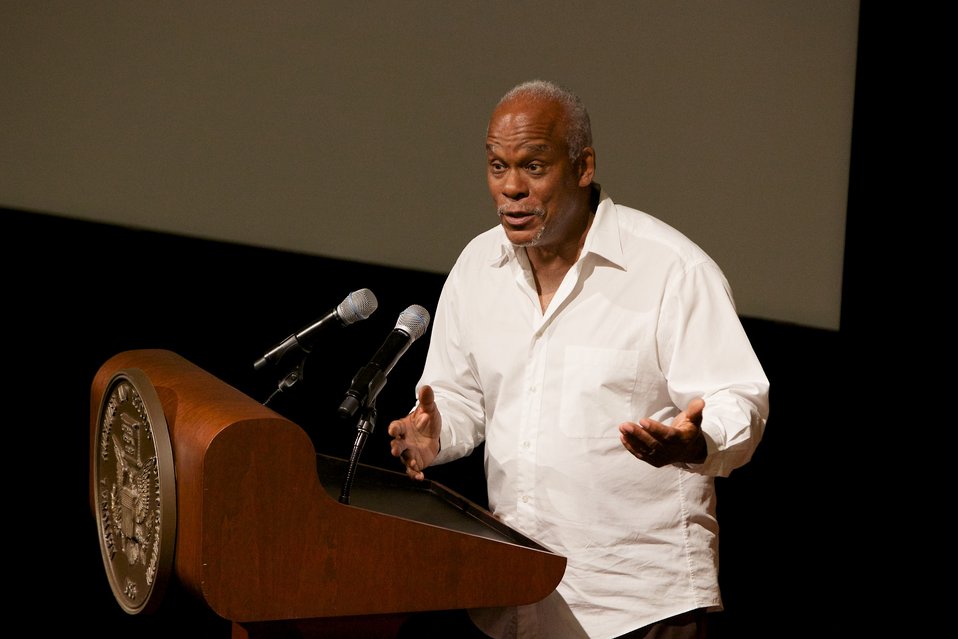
Freedom Summer